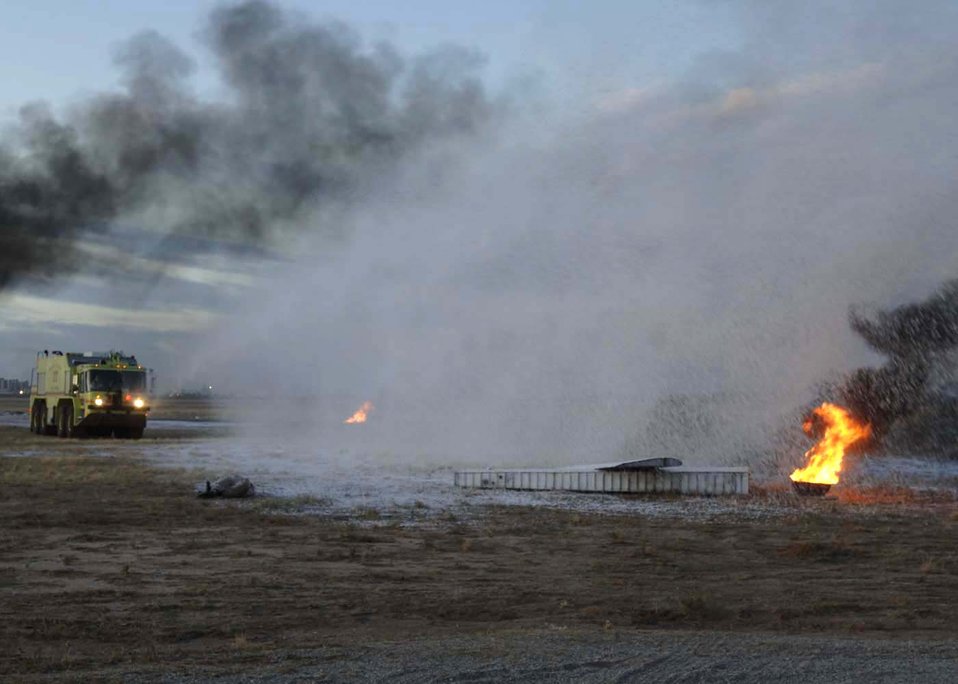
Training to fight fires together

Davis-Monthan Air Force Base firefighters put out a fire by the use of foam at a simulated crash site of a C-17 Globemaster III Dec. 4 at Davis-Monthan AFB, Ariz. Exercise Vigilant Shield 07 is a joint Department of Defense and federal nuclear weapon accident exercise. The exercise scenario involved a C-17 carrying four nuclear weapons to be diverted to Davis-Monthan AFB due to simulated engine failure that caused an aircraft accident. Davis-Monthan firefighters, the Tucson Fire Department, Tucson Police Department, and many different agencies ranging form local to national levels responded to the simulated scene.